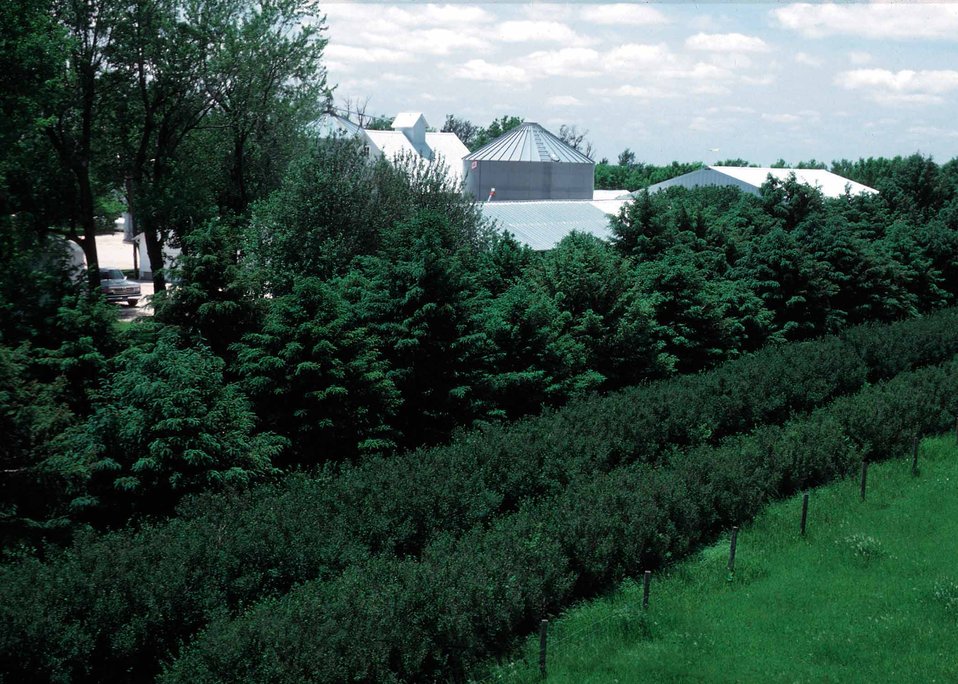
Multi-row farmstead windbreak in central Iowa.